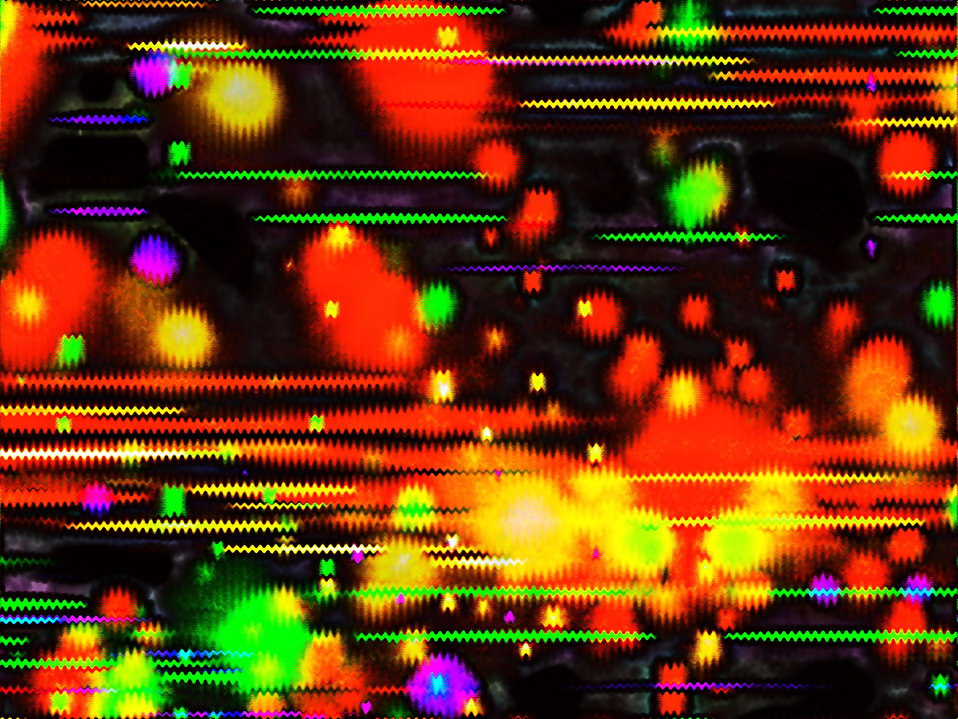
Paulino

Background.